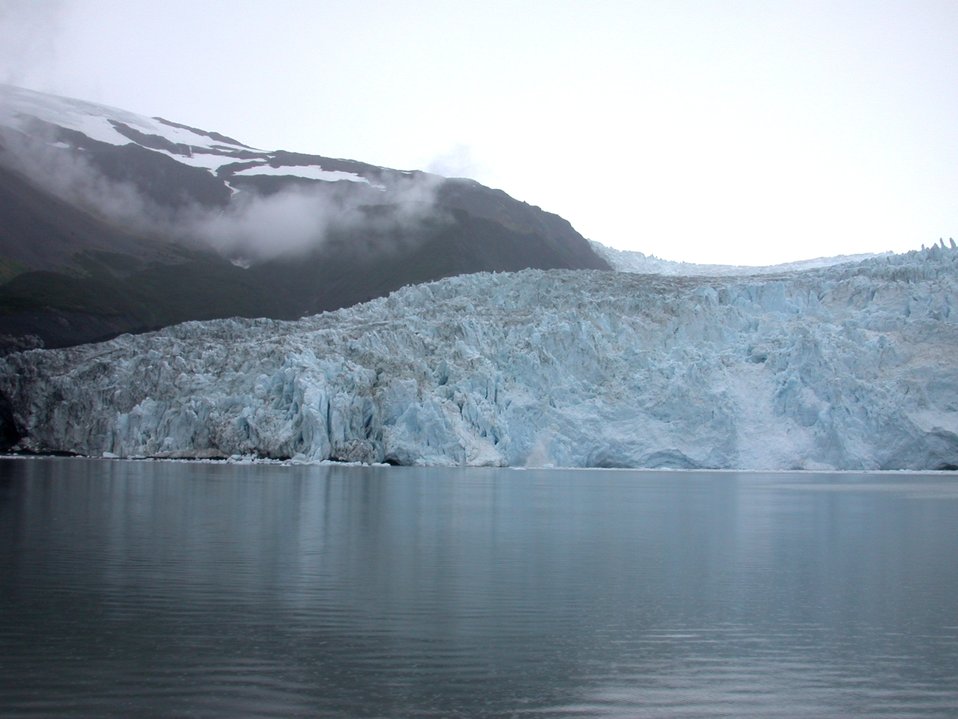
Aialik Glacier in Kenai Fjords.